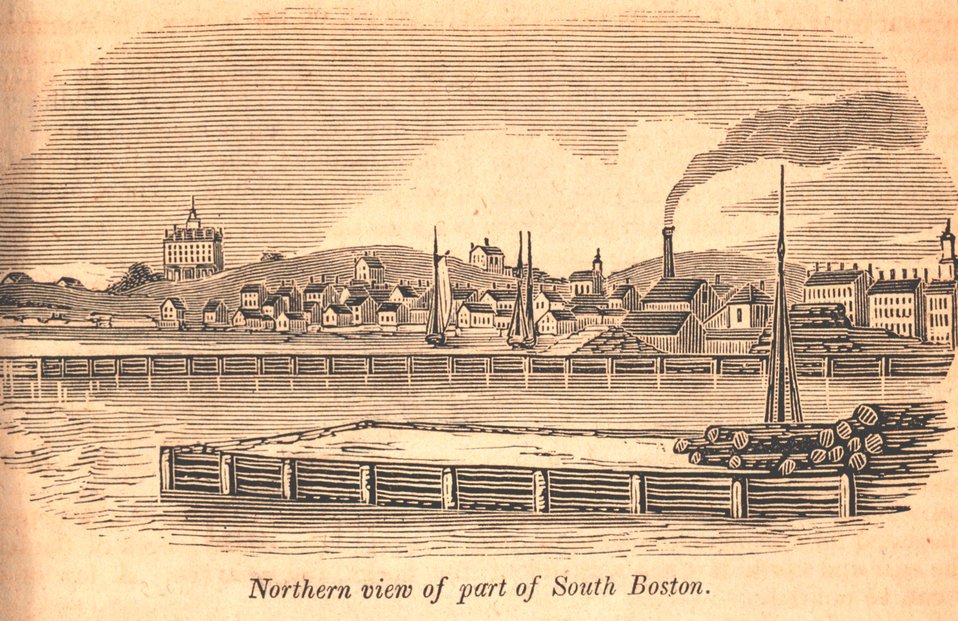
A northern view of South Boston. The Washington House is the large building on the left. In: Historical Collections ... of Every Town in Massachusetts. 1841.